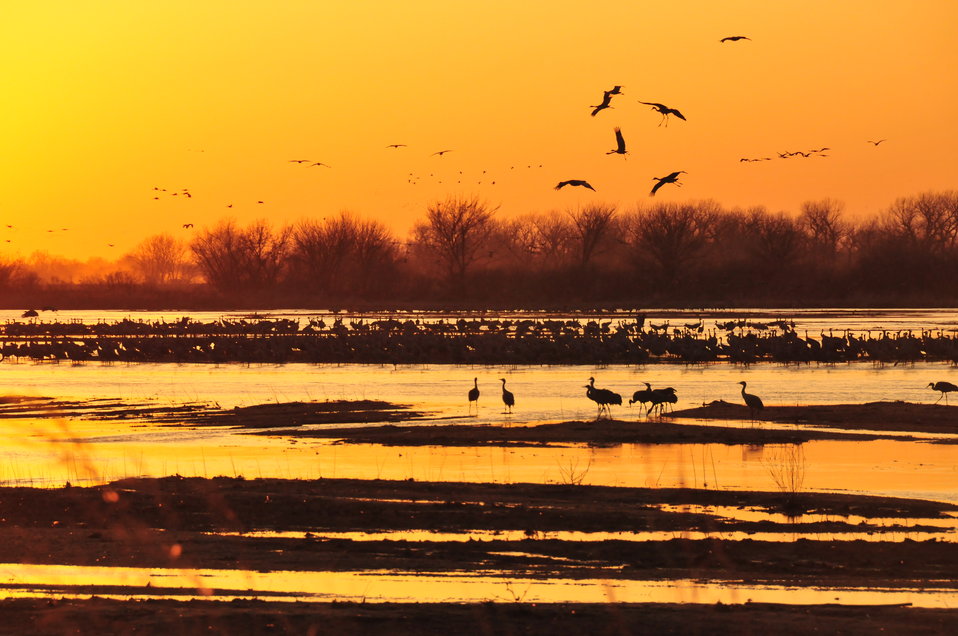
Sandhill Cranes Flying to Roost on Platte River in Central Nebraska

Sandhill cranes gather at sunset to roost on the shallow sandbars of the Platte River near Kearney, Nebraska.